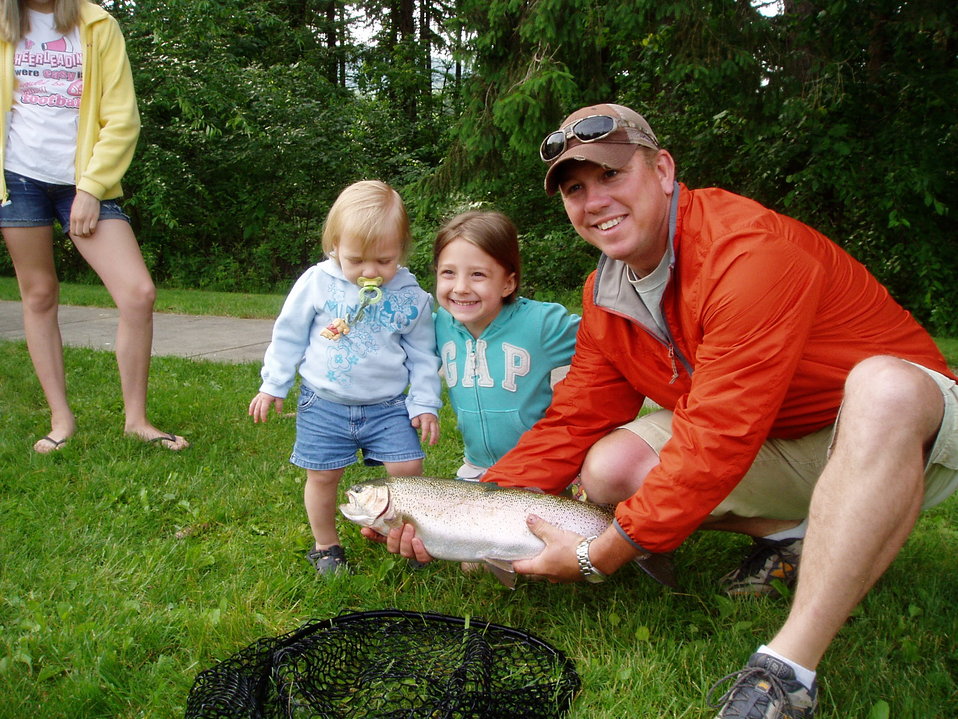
Northeast Fishery Center's Annual Fishing Event

Family with their catch at the Northeast Fishery Center's annual fishing event in Lamar, PA.